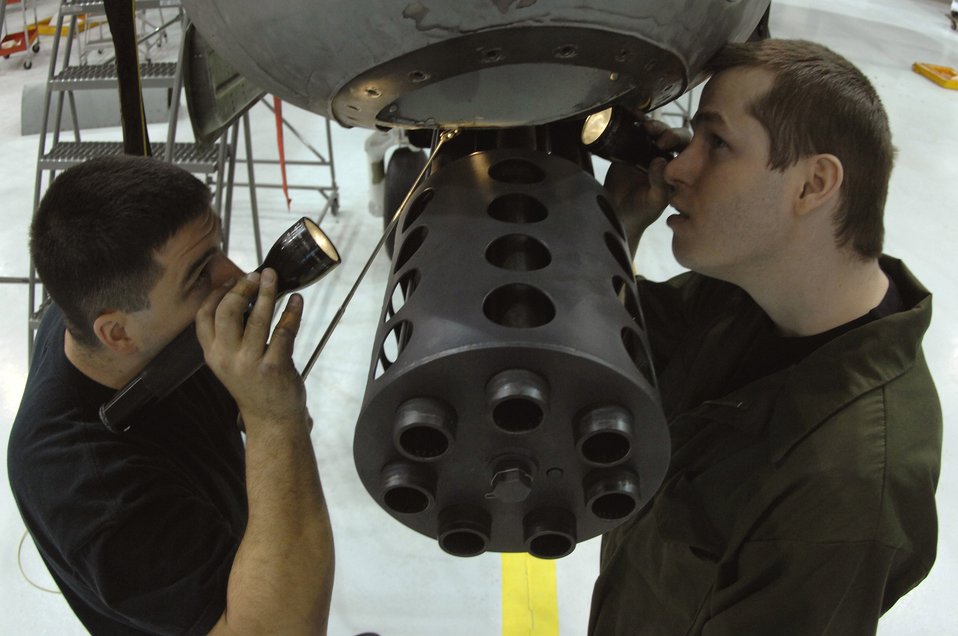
It's just a phase they're going through

Staff Sgt. Jason Belanger (left) and Senior Airman Timothy Jeter inspect the nose section of an A-10 Thunderbolt II March 13 during phase maintenance at Eielson Air Force Base, Alaska. During phase maintenance, Airmen overhaul the entire aircraft to ensure it is ready for safe flight. The Airmen and the other maintainers in the 345th Aircraft Maintenance Squadron can turn an A-10 around in 10 days.